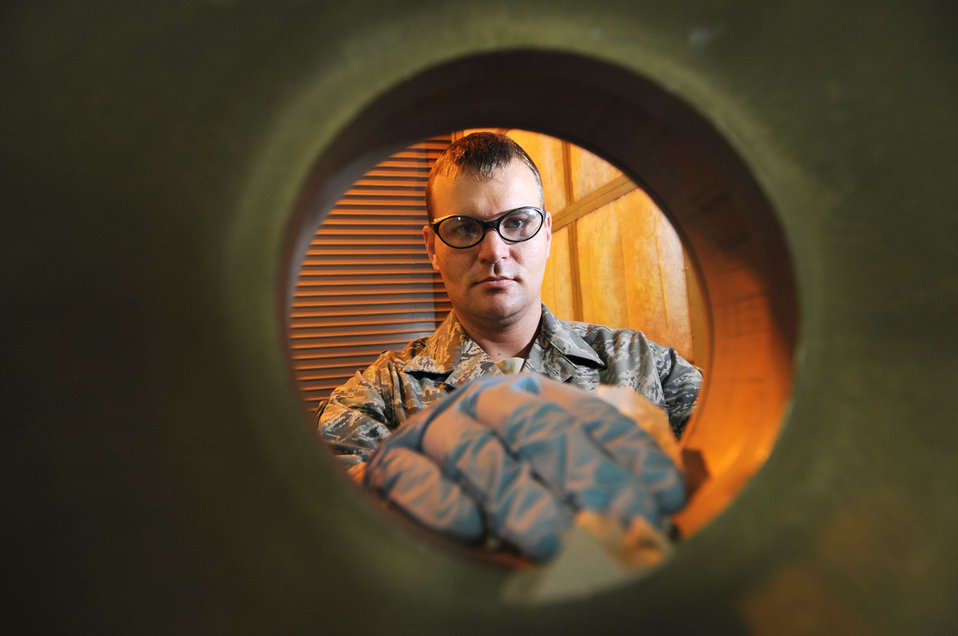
What about blue?

Staff Sgt. Brian Walker prepares an aircraft wheel to be painted, Oct. 5, 2009 at an air base in Southwest Asia. Sergeant Walker is an aircraft structural maintenance journeyman with the 379th Expeditionary Maintenance Squadron, and deployed from the Tennessee Air National Guard. The squadron performs maintenance on external sheet metal, internal framework and plastic, as well as tubing and cable assemblies on aircraft.